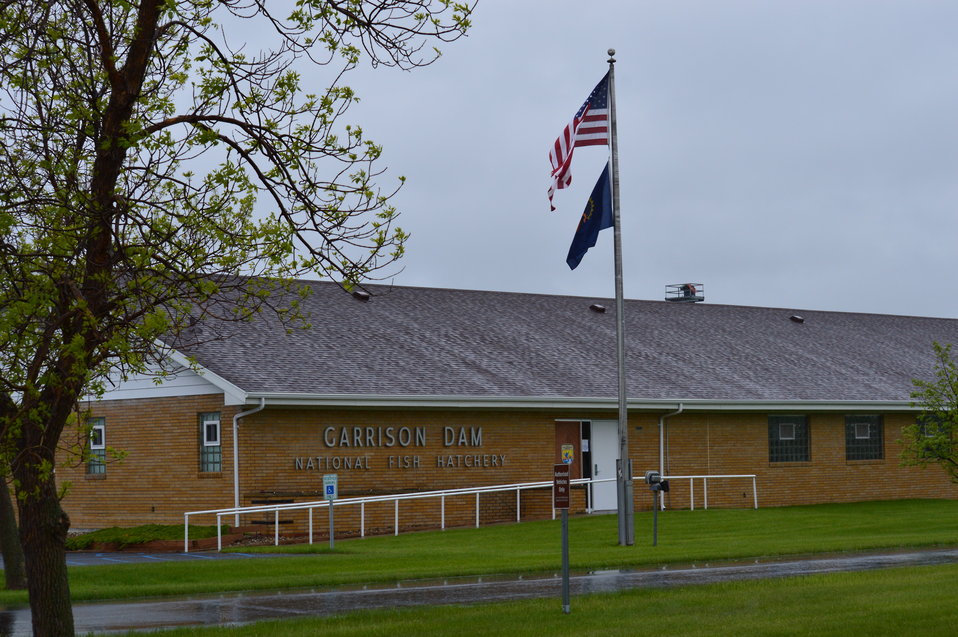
Garrison Dam NFH main building

Garrison Dam National Fish Hatchery in North Dakota.